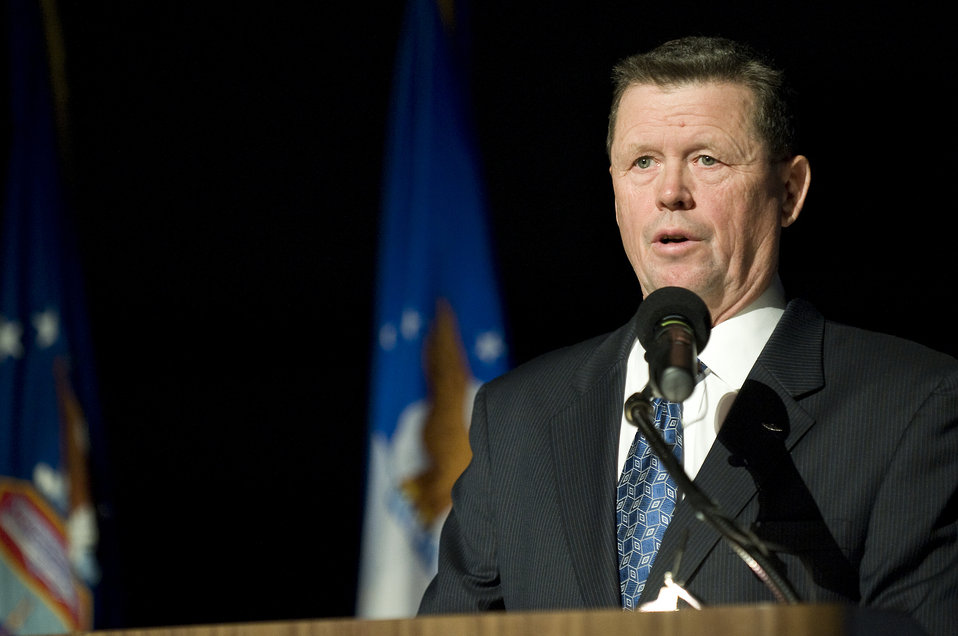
Museum opens exhibit dedicated to 'Warrior Airmen'

Mr. Dick Anderegg welcomes more than 200 honorees and guests for the opening of the Warrior Airmen Exhibit Jan. 12 at the National Museum of the U.S. Air Force at Wright-Patterson Air Force Base, Ohio. Mr. Anderegg is director of Air Force history and museums.